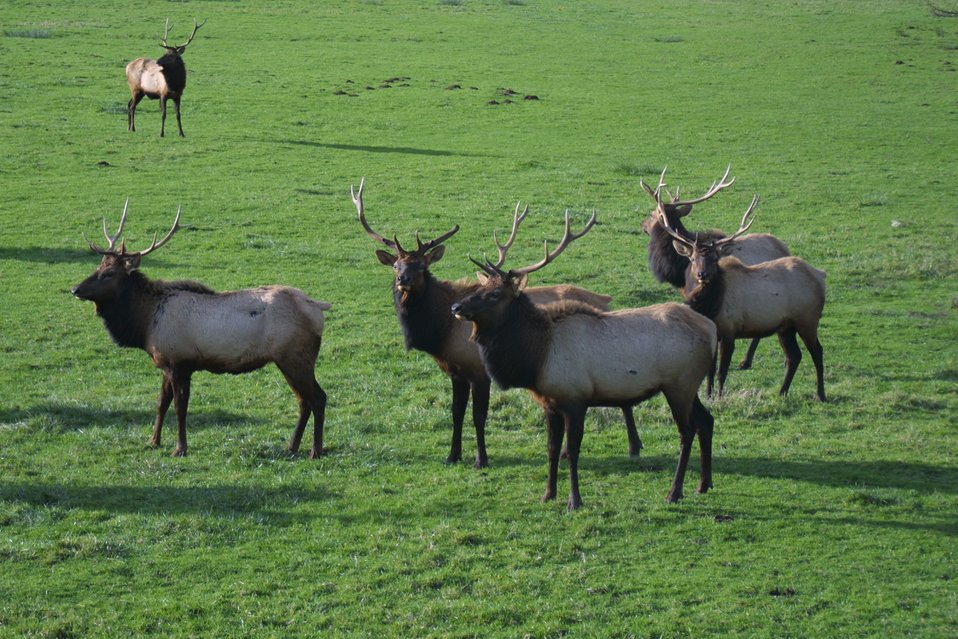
Elk at the Dean Creek Watchable Wildlife site near Reedsport, Oregon.